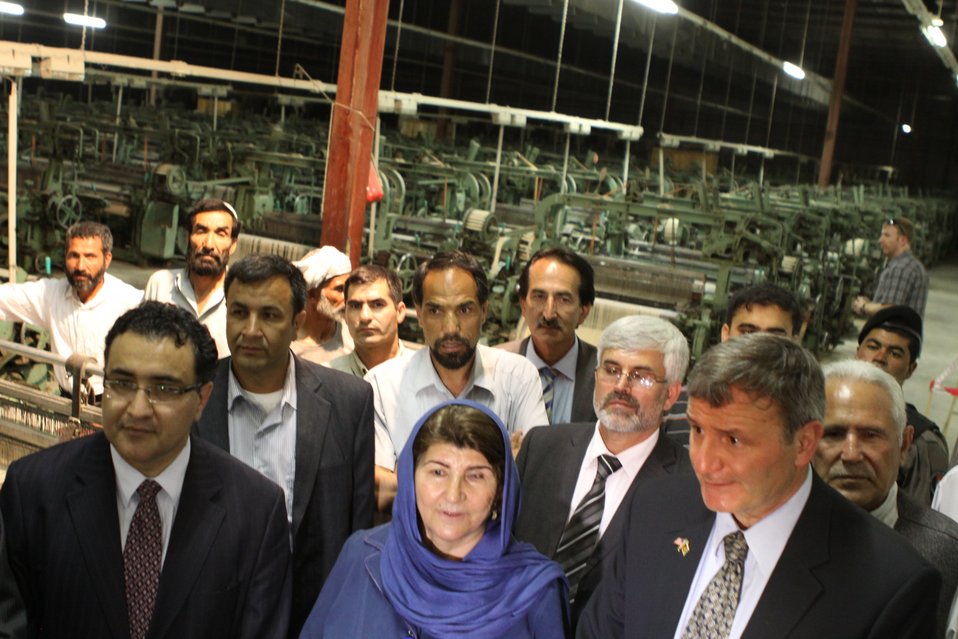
100525 Hirat Textile Company 773